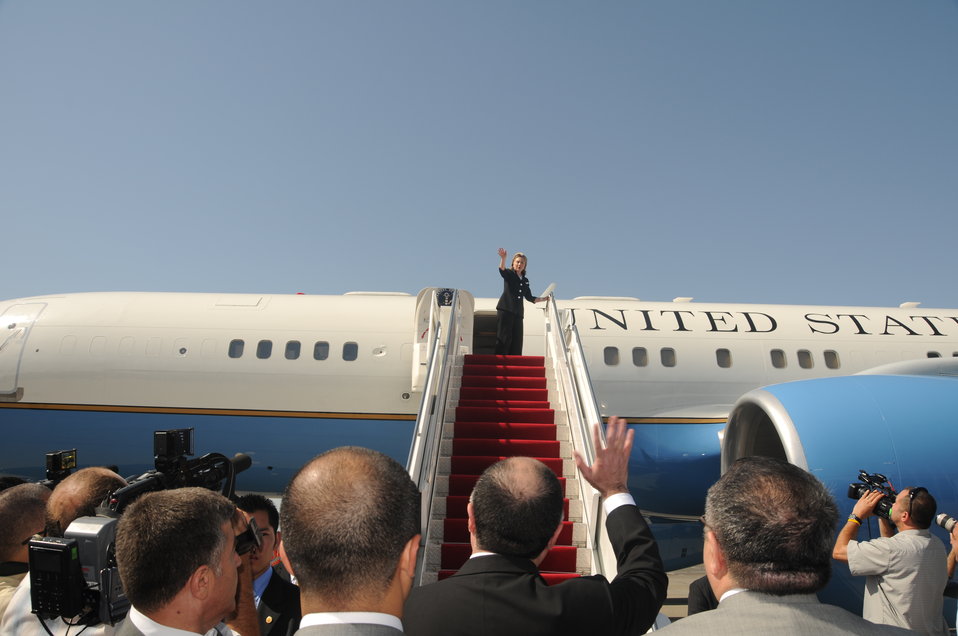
Secretary Clinton Says Farewell to Baku

U.S. Secretary of State Hillary Rodham Clinton says farewell to Baku, Azerbaijan, on July 4, 2010.